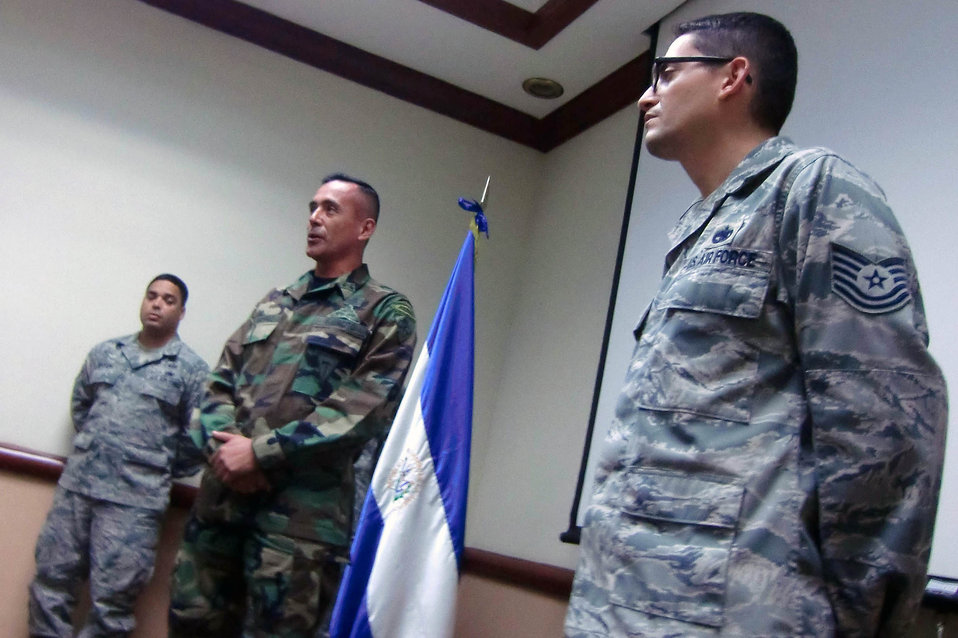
Airman receives hometown promotion

Master Sgt. Fred Campos listens as Col. Walter Arevalo congratulates him on his promotion Oct. 29, 2010 in El Salvador. Sergeant Campos a Salvadoran-American serving in the U.S. Air Force with Special Operations Command South. Colonel Arevalo is the commander of El Salvador's Special Operations Brigade.